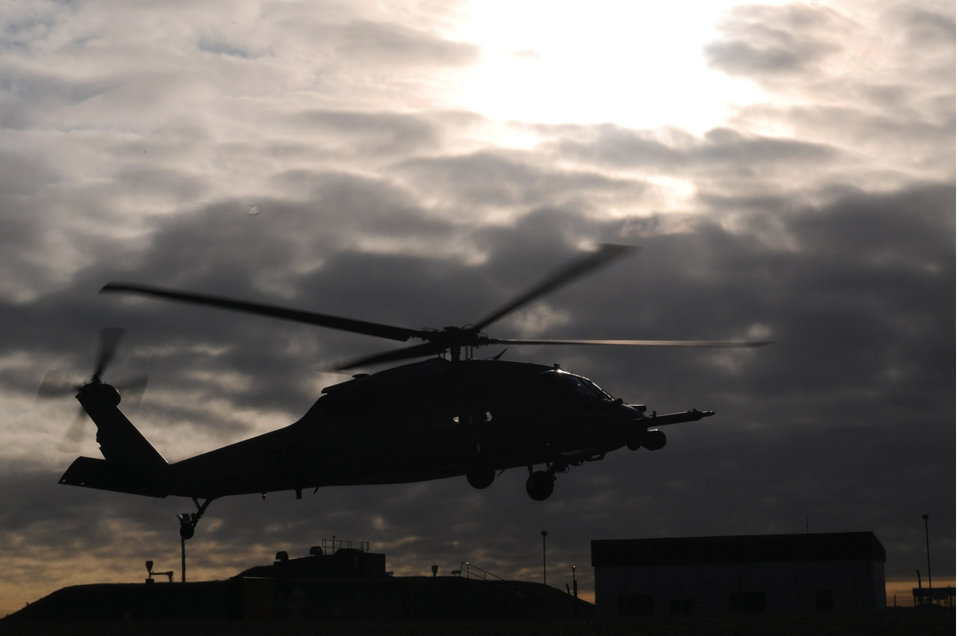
Airmen lead effort to rescue injured crewman at sea

An HH-60G Pave Hawk with the 56th Rescue Squadron takes off to fly more than 500 miles west of Ireland for a real-world rescue mission Dec. 10 at Royal Air Force Lakenheath, England. A crew member of a cargo ship suffered a serious head injury requiring a medical evacuation, and U.S. forces were called upon to help.